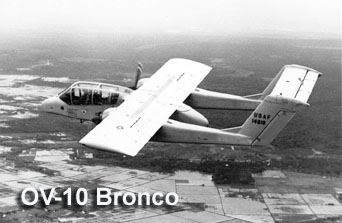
OV-10 Bronco

The OV-10 Bronco, a forward air controller aircraft, flies on its maiden flight August 1968 in South Vietnam during a 90-day period of combat evaluation. The OV-10 performs the same mission as the O-1 and O-2 FAC aircraft, to identify and mark targets for tactical fignter-bomber air strikes. The aircraft was assigned to the 19th TASS.